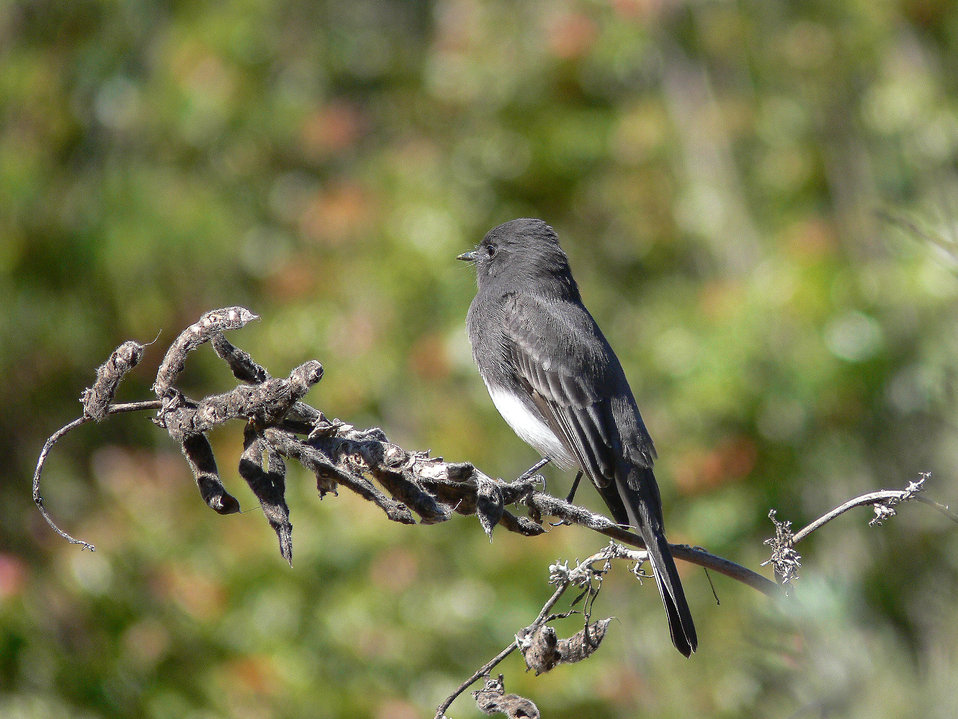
Black phoebe

A black phoebe perches on a branch, looking away from the camera.